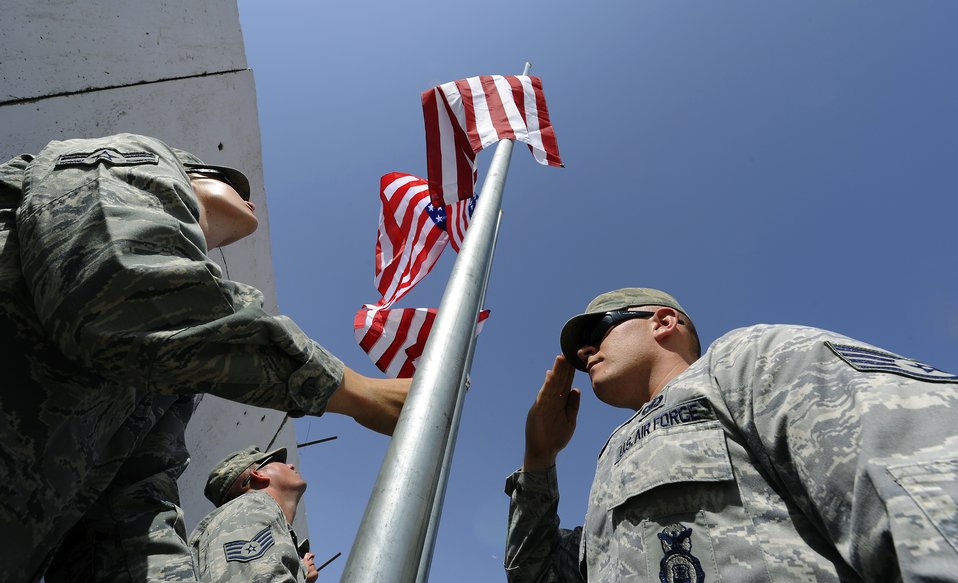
Salute

Airman 1st Class Megan Kerr and Staff Sgt. Kenneth Van Winkle hoist the flag during 9/11 events Sept. 11, 2011, at Kabul International Airport in Afghanistan. Kerr and Van Winkle were part of an all-volunteer team that raised, lowered and folded flags for more than 150 wing members. Kerr and Van Winkle are both security force members assigned to the 438th Air Expeditionary Advisory Squadron.